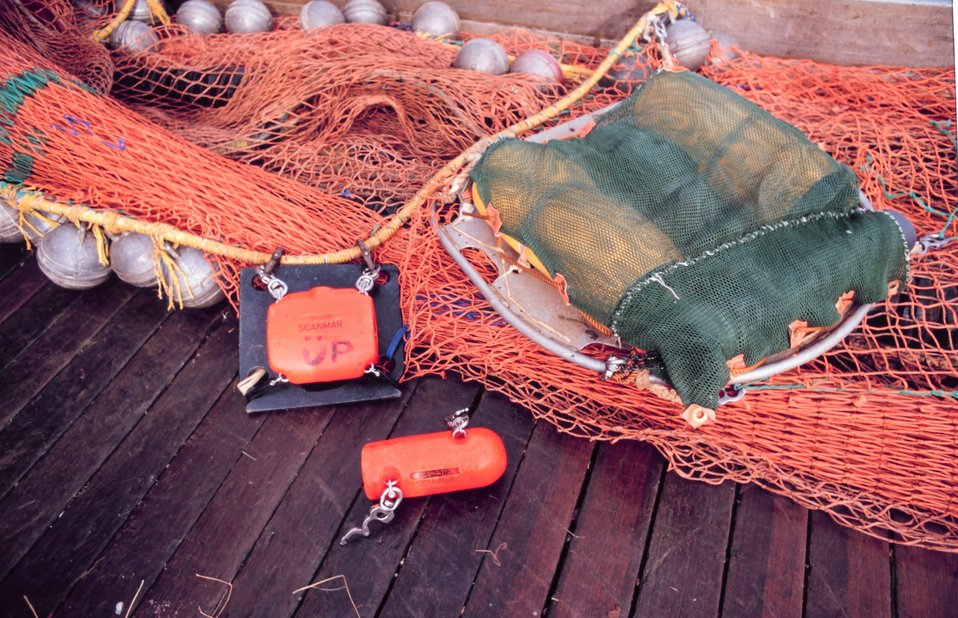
Acoustic sensors used with net mensurations system -- sensors measure depth and opening of trawl net.